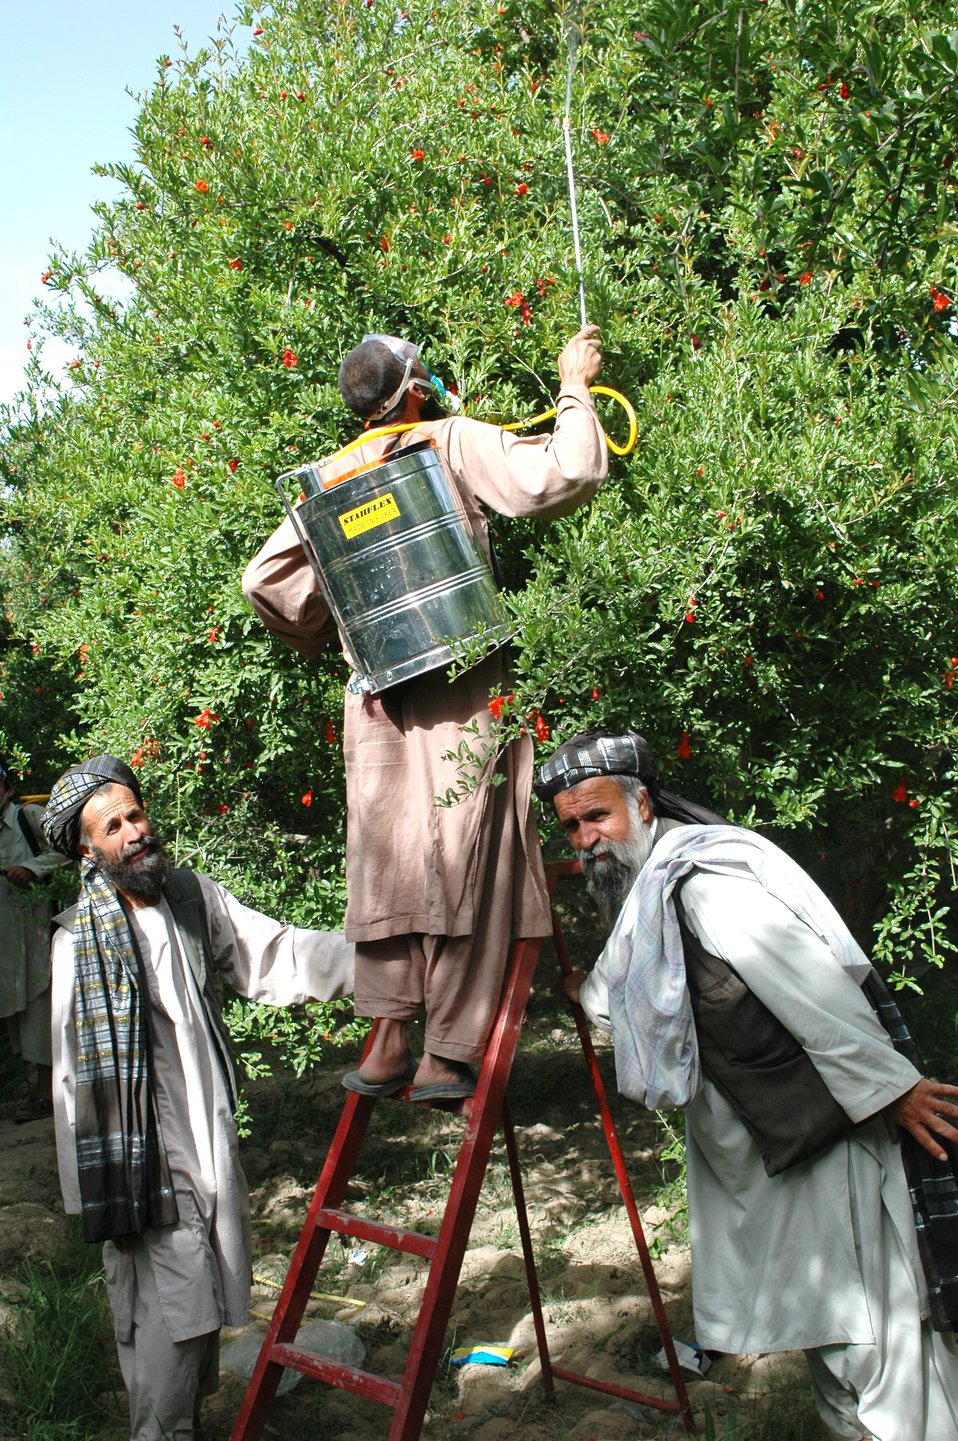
Dr Shah Visits Argandab April 10, 2010